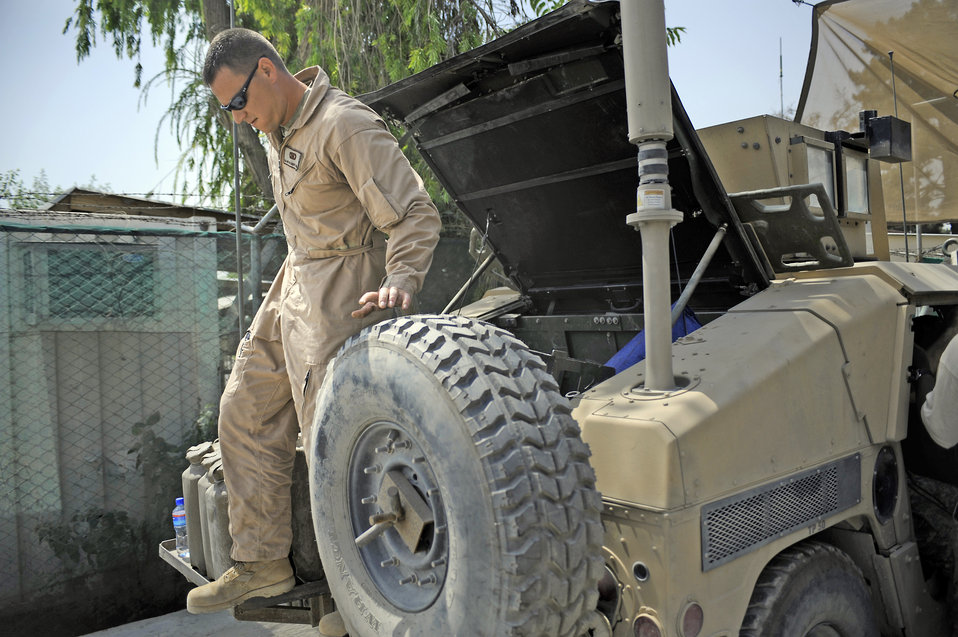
Tactical Comm Airmen keep military ops online, on target

Staff Sgt. Josh Newman, Nangarhar Provincial Reconstruction Team satellite systems specialist, performs routine maintenance on a mine-resistant, ambush-protected vehicle May 30 at Forward Operating Base Fenley-Shields, Afghanistan. The PRT is responsible for development and reconstruction projects in Nangarhar Province. The projects are built by local contractors and are designed to improve the livelihood of the people living in the area.